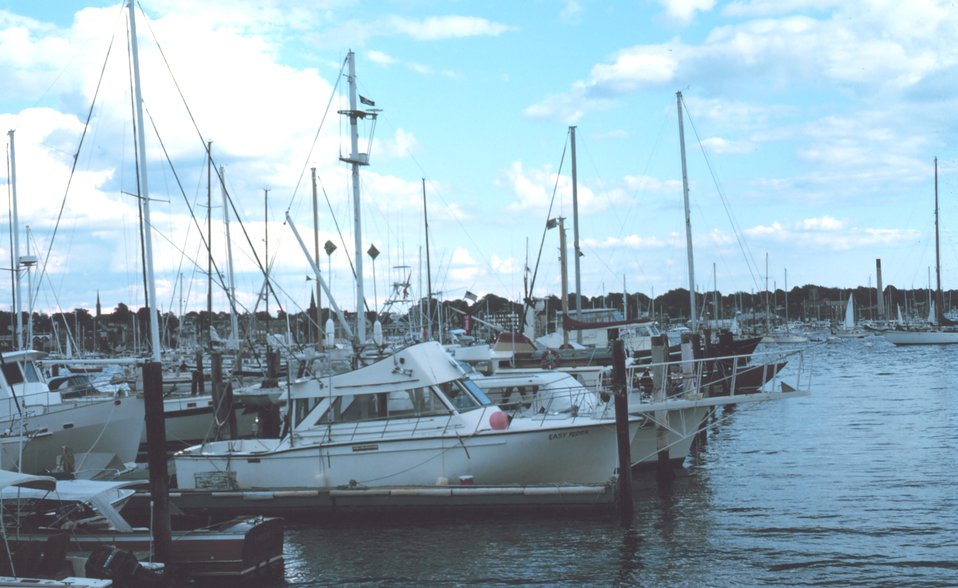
Recreational fishing boats at Newport